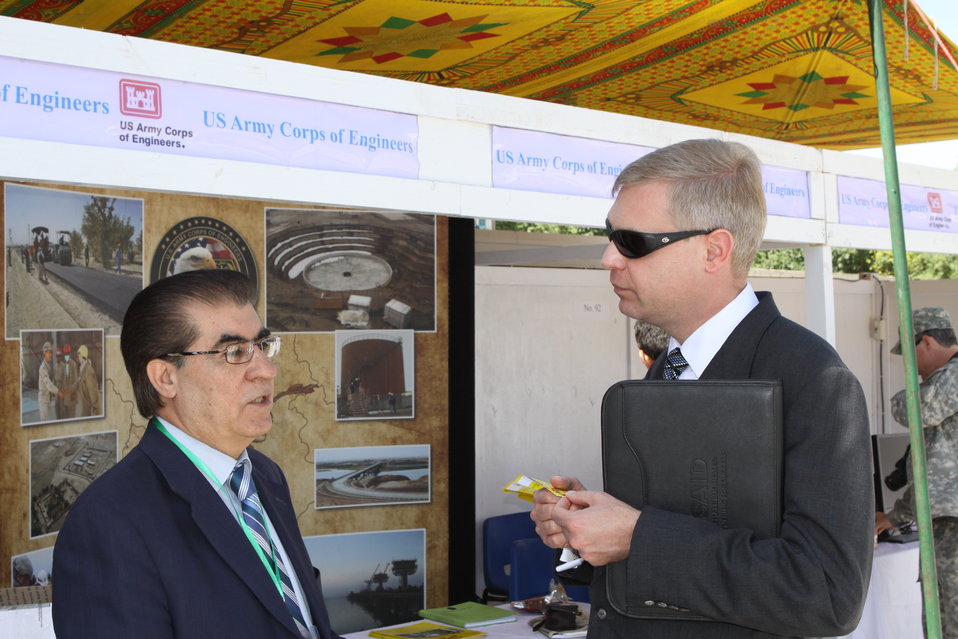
100522 ATVI Graduation 016